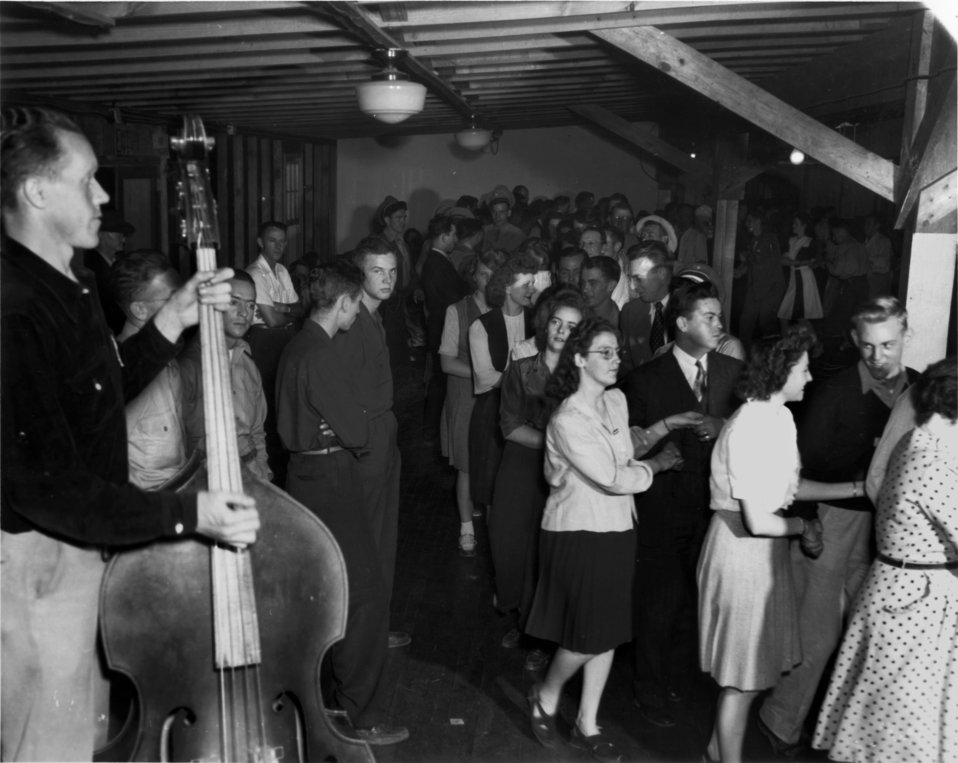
Mid-town Rec. Hall Square dancing Oak Ridge

633-5 Ed Westcott 6/6/45
Oak Ridge Tennessee